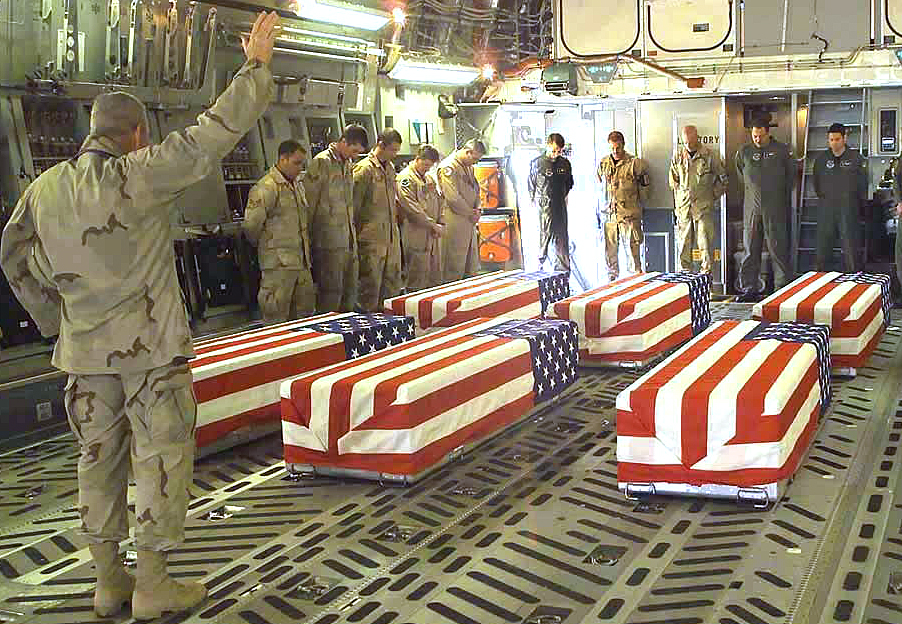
Last rites

OPERATION ENDURING FREEDOM -- Army Chaplain (Col.) Richard Rogers performs last rites March 25 for six airmen killed when their HH-60G Pave Hawk helicopter crashed near Ghazni, Afghanistan, March 23. The helicopter crew was on its way to pick up two Afghan children for treatment in U.S. medical facilities at Bagram Air Base. The remains were being flown to Dover Air Force Base, Del. The airmens’ names are being withheld pending notification of next of kin.